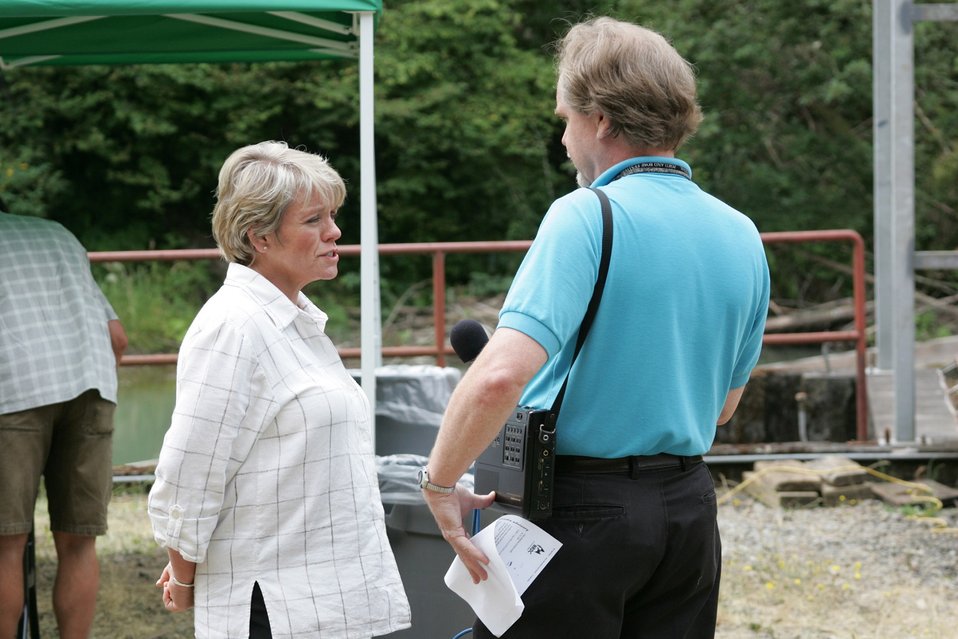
Ley Garnet from Oregon Public Broadcasting interviews BLM Director Kathleen Clarke during the Four C's Award Ceremony at the Little Sandy Dam.